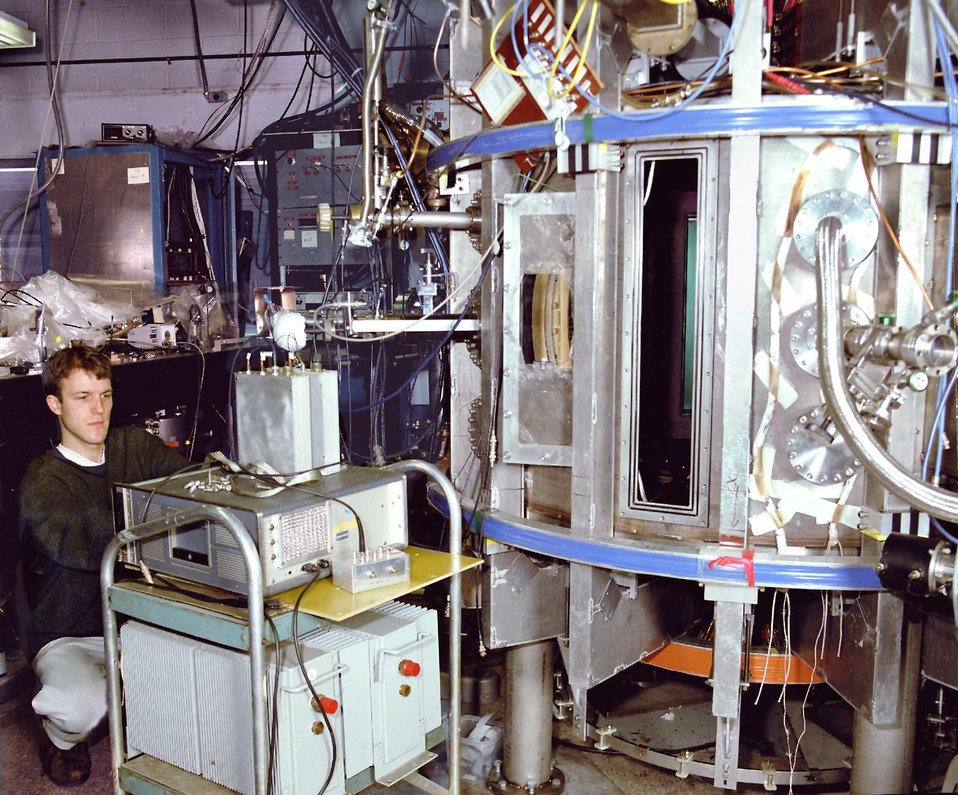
PPPL SCIENTIST AT THE CURRENT DRIVE EXPERIMENT-UPGRADE (CDX-U).

EXPERIMENTS IN PROGRESS ON THE CURRENT DRIVE EXPERIMENT-UPGRADE MAY LEAD TO IMPROVED PLASMA PERFORMANCE IN THE NEAR TERM AS WELL AS SOLUTIONS AND DEVELOPMENTS IN PLASMA SCIENCE TECHNOLOGY.